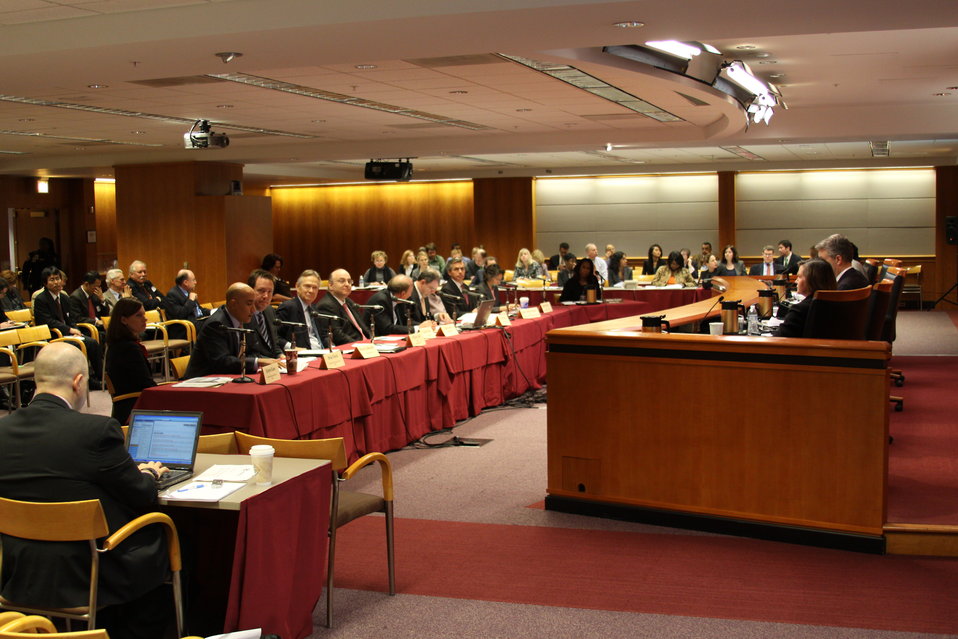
November Open Meeting